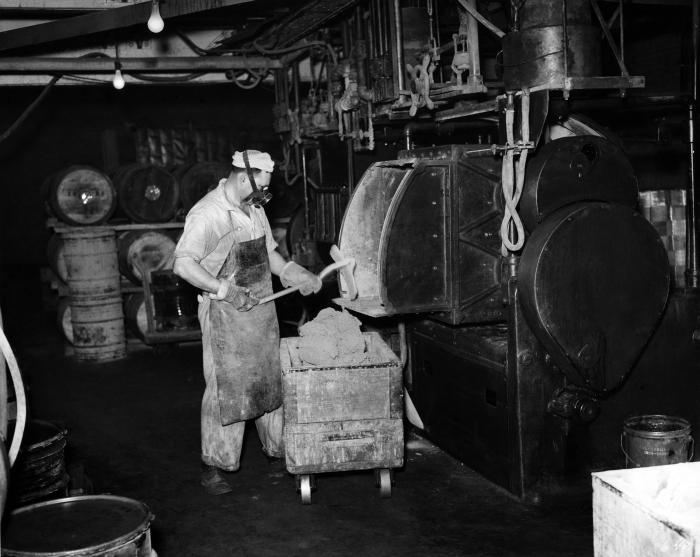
This photograph was provided by the Center for Disease Control's (CDC), National Institute for Occupational Safety and Health (NIOSH). The image depicted an industrial plant employee who was working with wet lead paste. Note that the worker was using personal protective equipment, i.e., cap, coveralls, and respirator, at his work station.Workers can be exposed to lead through inhalation of fumes and dusts, as well as through ingestion as a result of lead-contaminated hands, food, drinks, cosmetics, tobacco products, and clothing. Furthermore, workers can take lead home on their clothes, skin, hair, tools, and in their vehicles, potentially exposing their families to this element's harmful health effects.